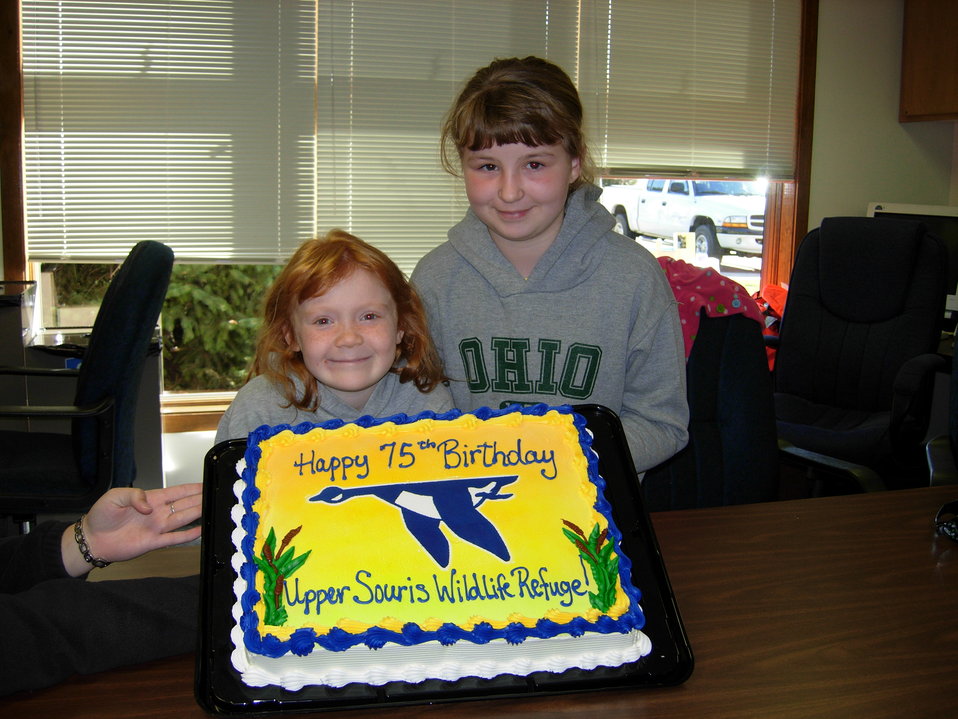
Birthday Cake for Upper Souris Refuge 75th Birthday

These two girls and others enjoyed the events and activities the refuge had to offer for it's 75th birthday celebration.